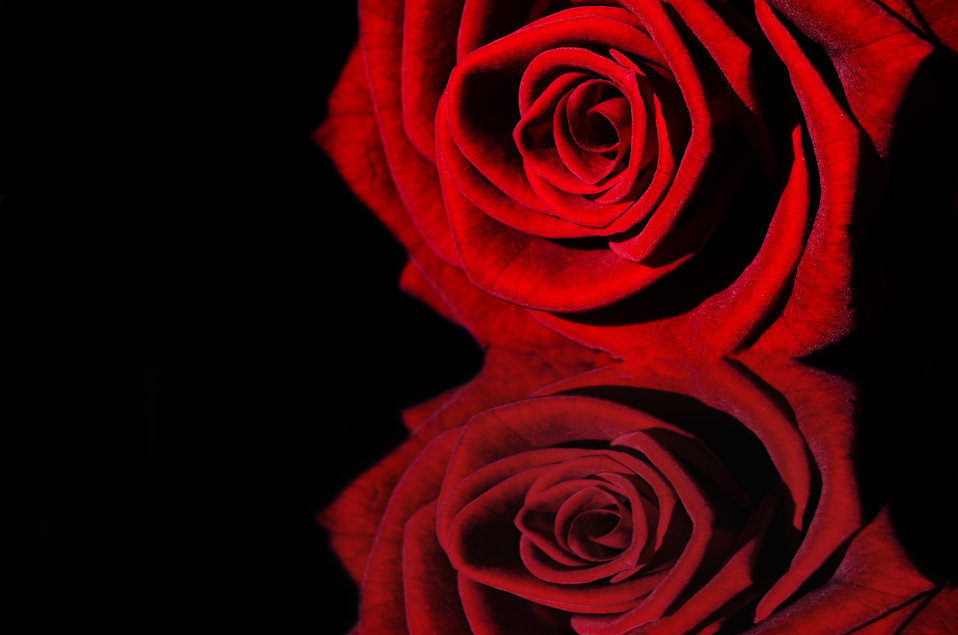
Rose and reflection.